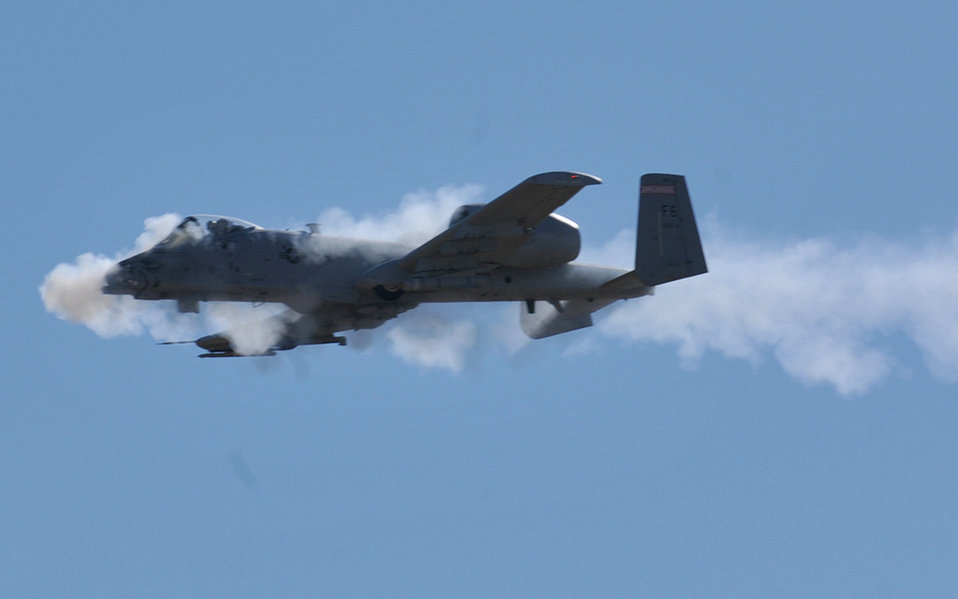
Show of force

An A-10C Thunderbolt II from the Arkansas Air National Guard's 188th Fighter Wing fires its seven-barrel Gatling gun at a ground target Oct. 14, 2010, during the 2010 Hawgsmoke competition in Boise, Idaho.